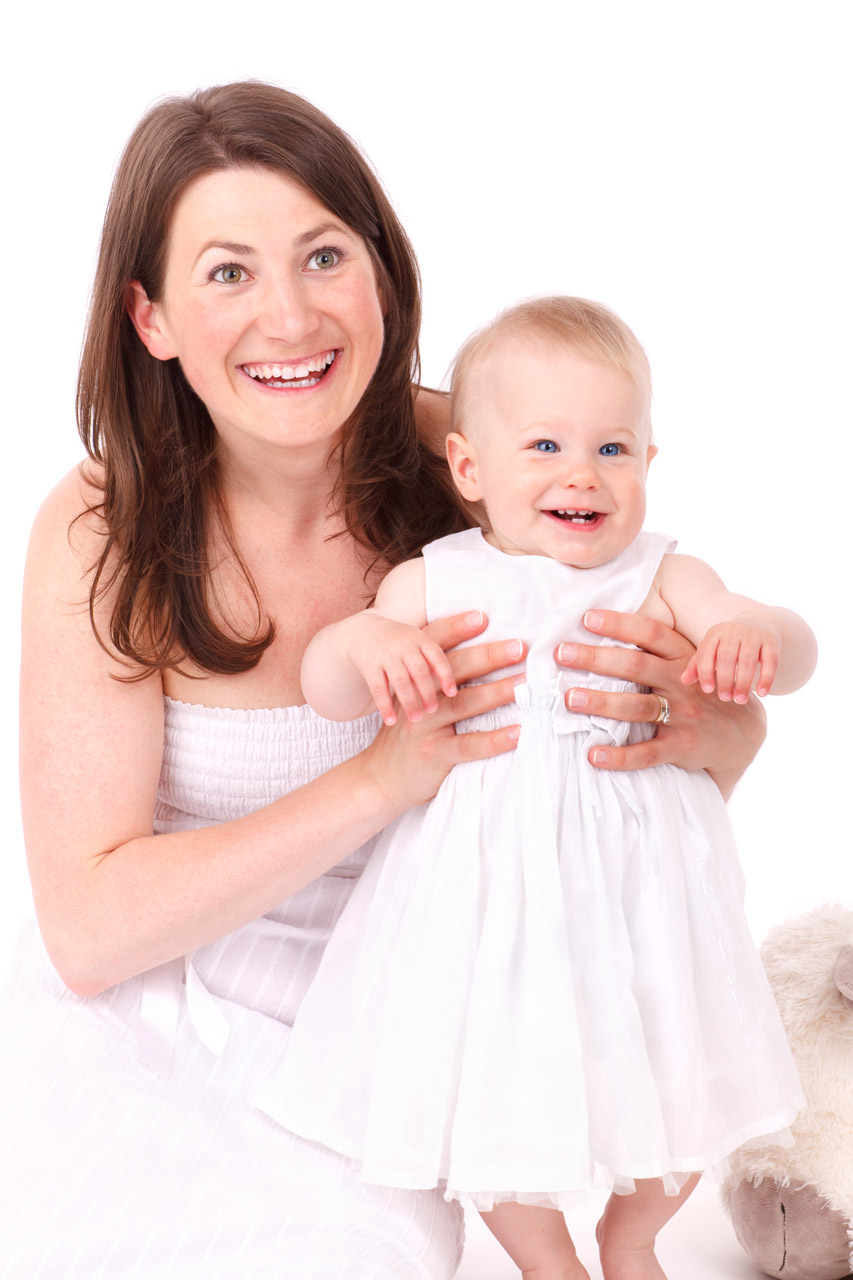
Mother and daughter smiling

Mother smiling with her daughter at something isolated on white background.